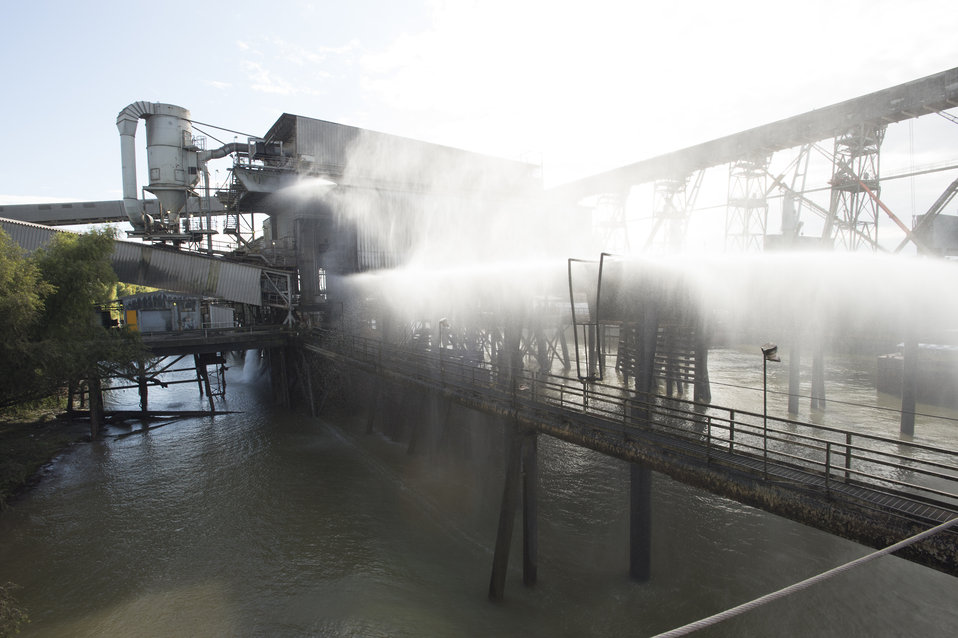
U.S. Department of Agriculture (USDA) Grain Inspection, Packers and Stockyards Administration (GIPSA) Federal Grain Inspection Service (FGIS) grain stations are washed down to cleanse loading and unloading areas and to prevent grain dust buildup near the Port of New Orleans in New Orleans, LA on Tuesday, Nov. 19, 2013.